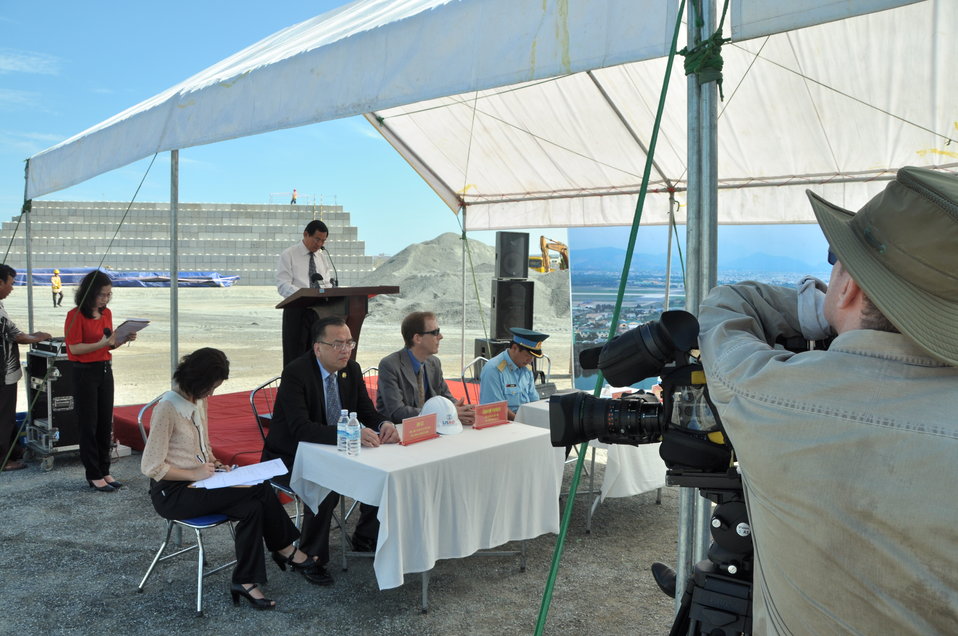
Media Tour of Environmental Remediation of Dioxin Contamination at Danang Airport

Danang, Vietnam
April 24, 2013